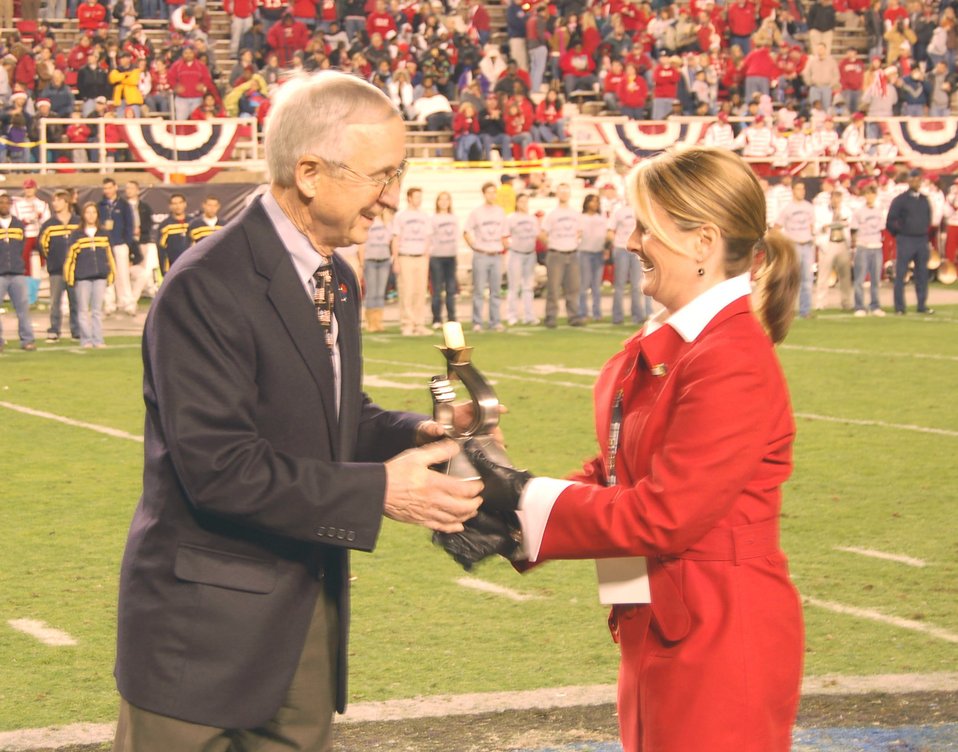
Deputy defense secretary named Great American Patriot

Deputy Secretary of Defense Gordon England receives the first Great American Patriot Award from a representative of MA3 LLC at the Bell Helicopter Armed Forces Bowl in Fort Worth, Texas, Dec. 23. The University of Utah Utes defeated the Golden Hurricanes of the University of Tulsa, 25-13.